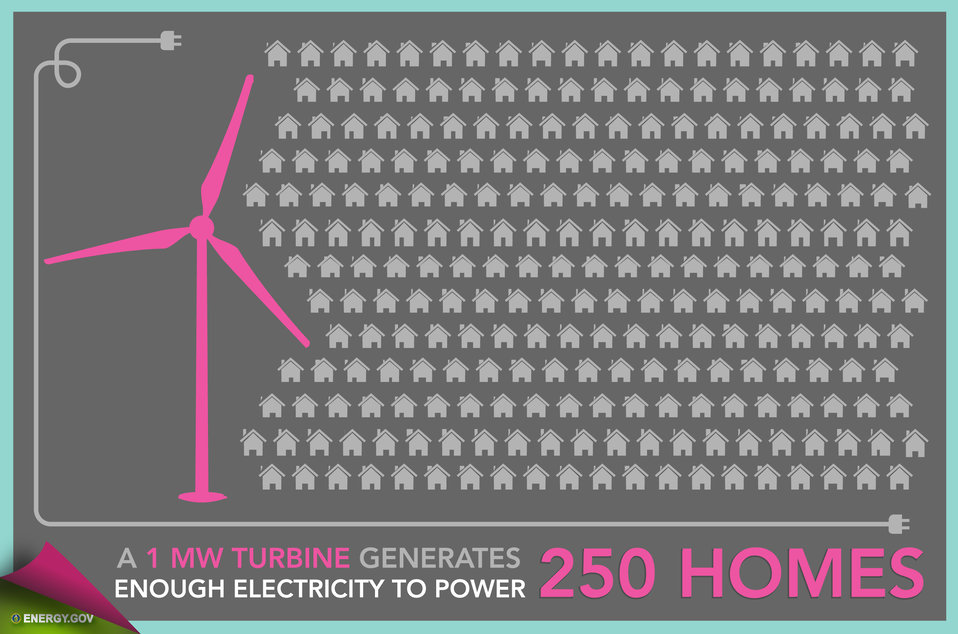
Wind Energy in America - Slide 5